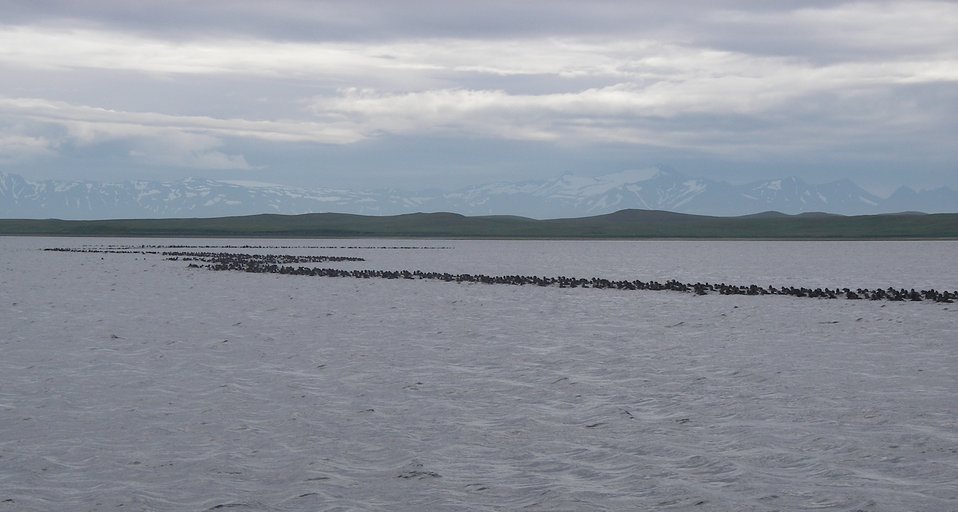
Stellers Eider molting flock

Flock of molting Steller's Eiders near Blaine Point, Izembek Lagoon, Izembek National Wildlife Refuge